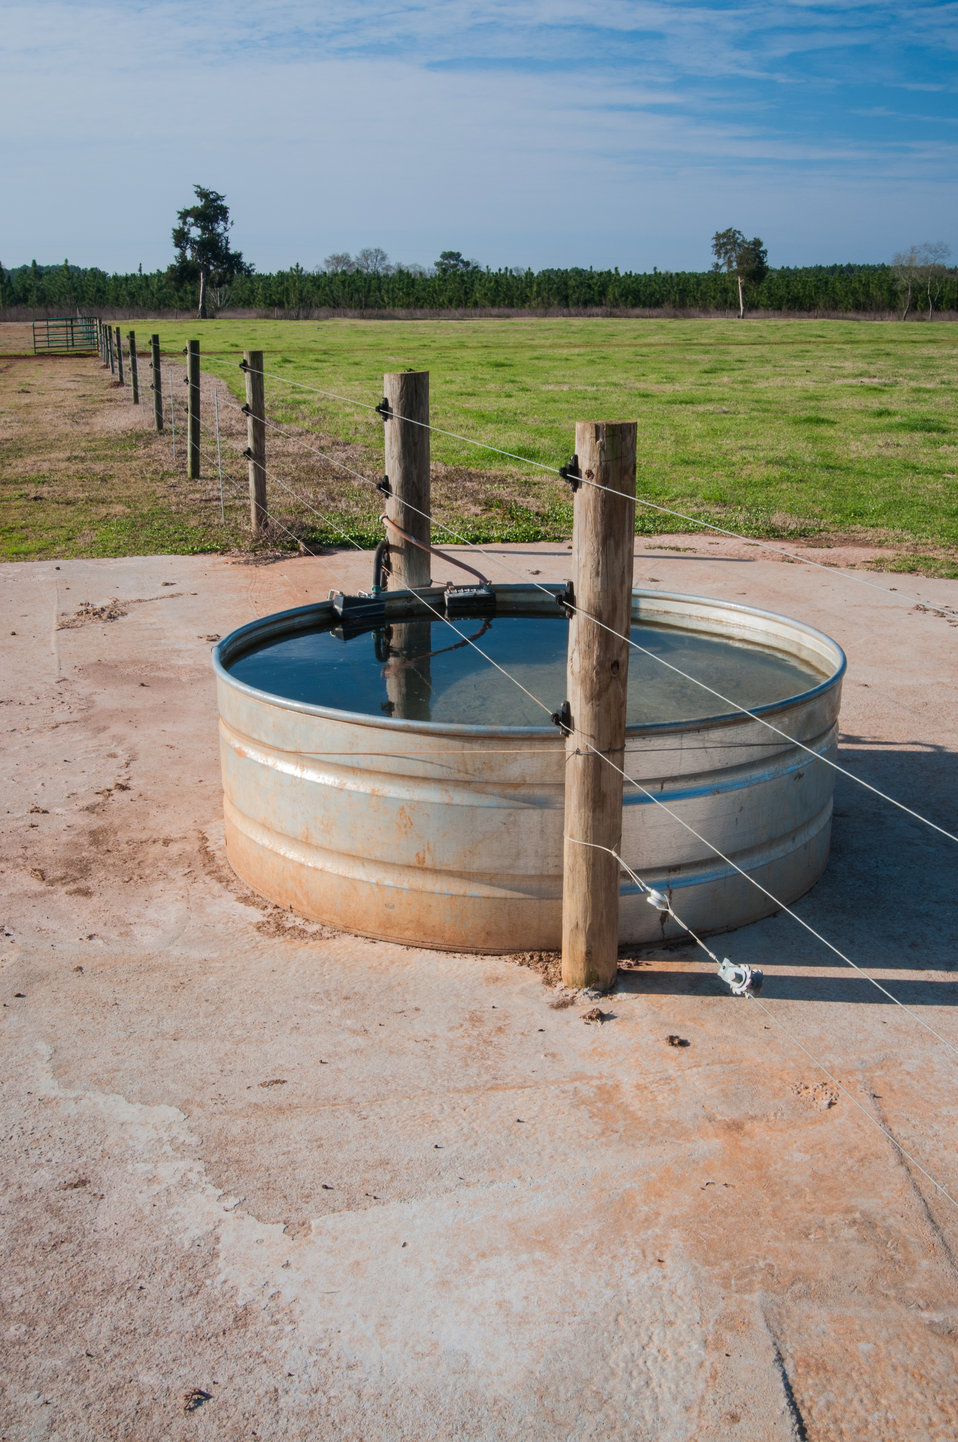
One of concrete pad installed around a watering trough that prevents soil erosion on Banamacc Farms in Edison, Calhoun County, GA on Mar. 7, 2013. Banamacc Farms owner Raul Moreno conservation plan calls for cross fencing and concrete pads around watering troughs. Moreno was able to secure funding for the improvements with a USDA NRCS Environmental Quality Incentive Program (EQIP) contract. Moreno mentioned, “NRCS provided me with specifications and designs that assisted me in installing conservation practices that will last for many years to come.” The USDA Strike Force Initiative has designated Calhoun County, GA as a Strike Force county selected to receive assistance to relieve persistent poverty in historically high-poverty counties.